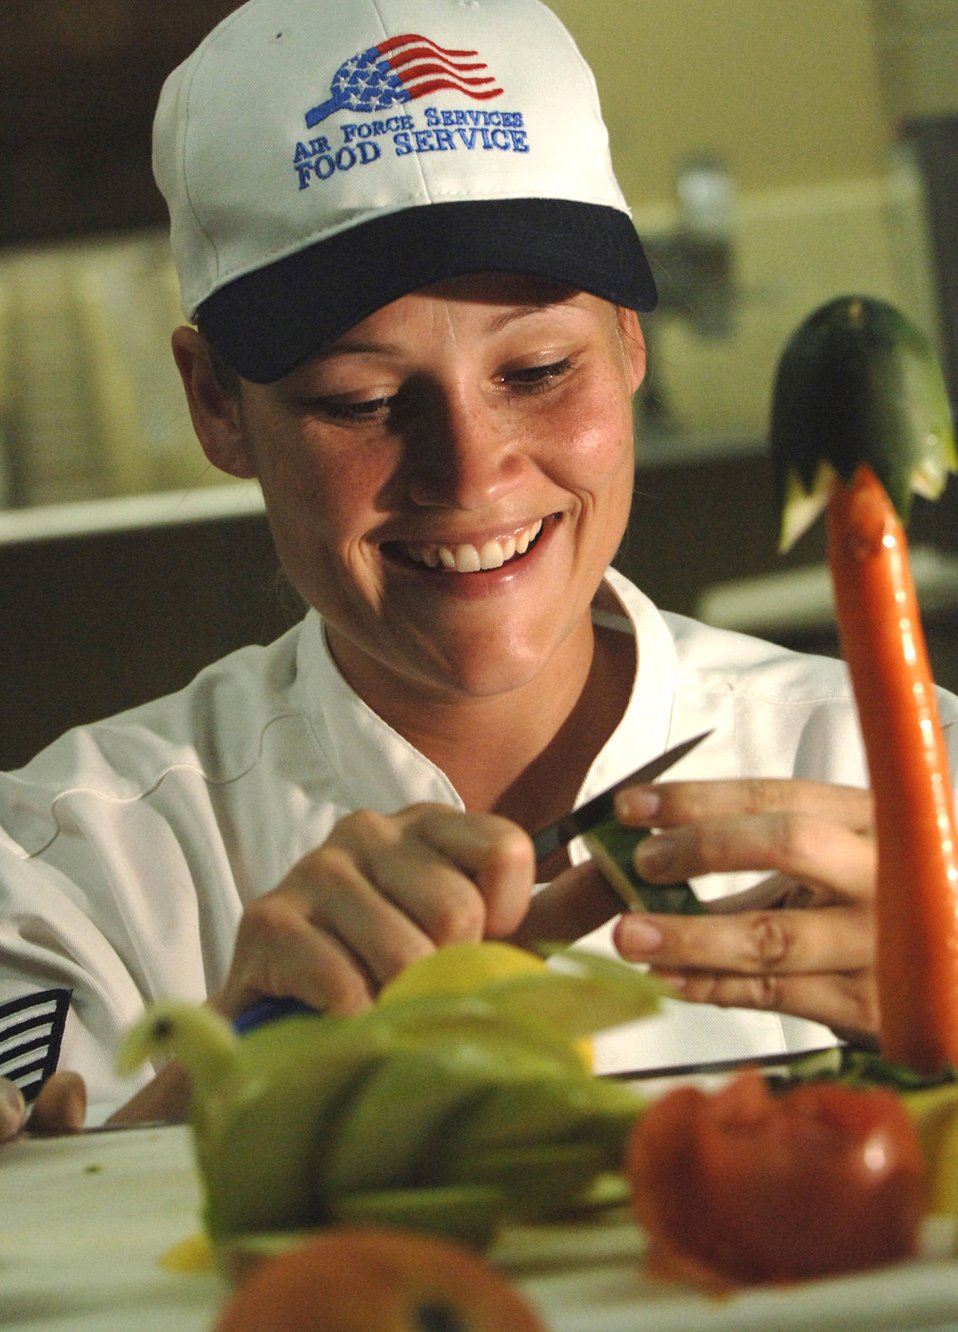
Festive preparations

ANDERSEN AIR FORCE BASE, Guam (AFPN) -- Staff Sgt. Tina Ross carves vegetables for the Thanksgiving festivities here. She is assigned to the 36th Services Squadron.